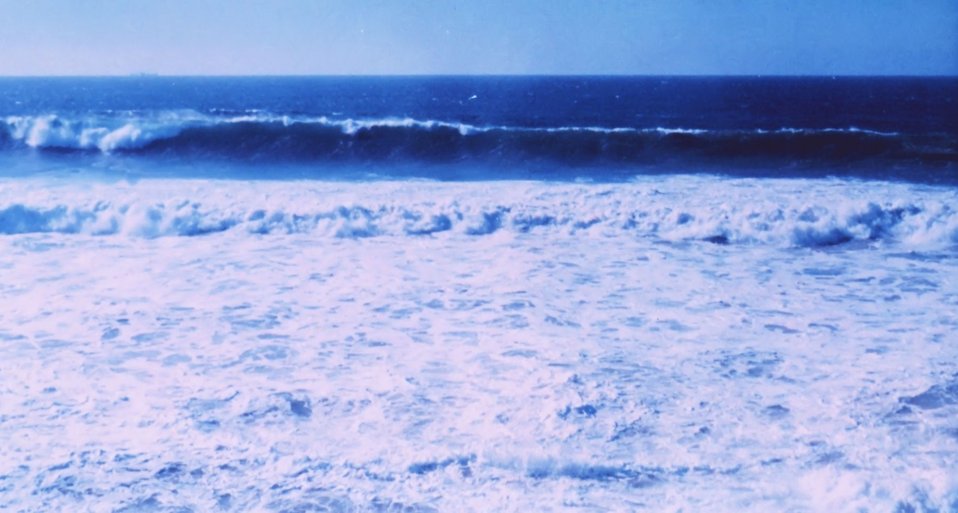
Huge surf breaking a 1/4 mile offshore. Approximately 30-40 miles north of Santa Cruz.